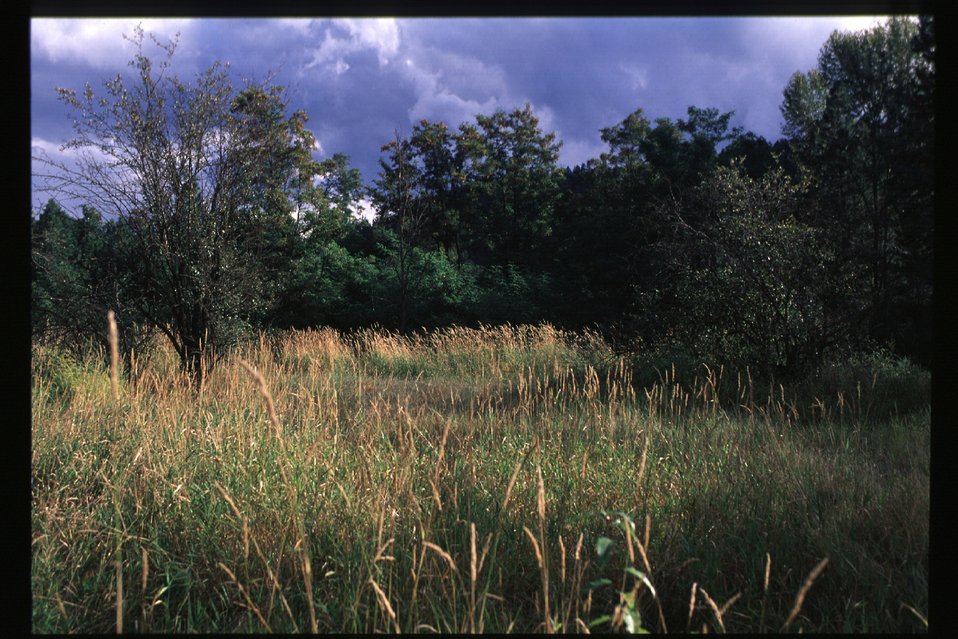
Scenic Blackwell Island Couer d'Alene Field Office UCSC Upper Columbia Salmon Clearwater District